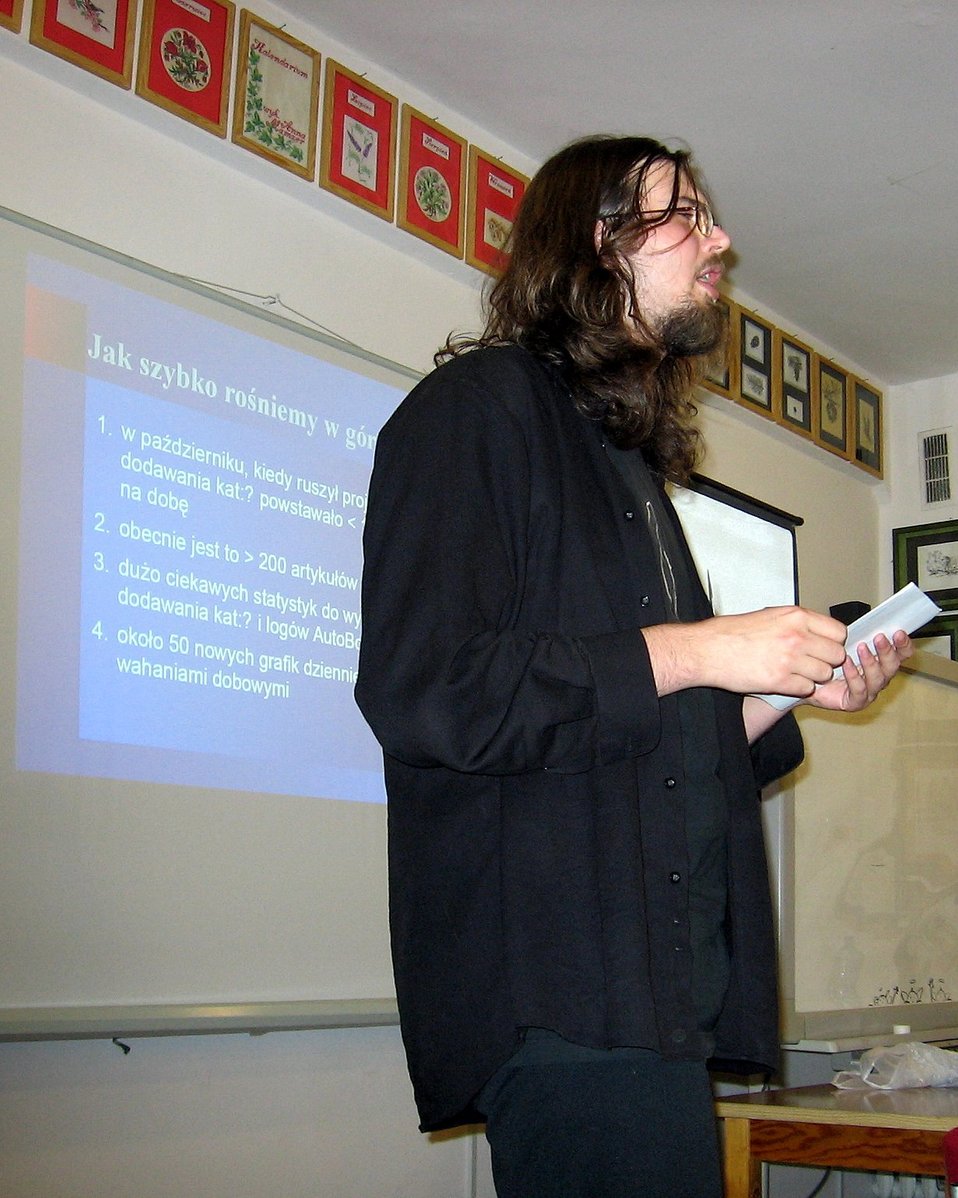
Jak szybko rosniemy w gore - opowiada WarX (198cm)